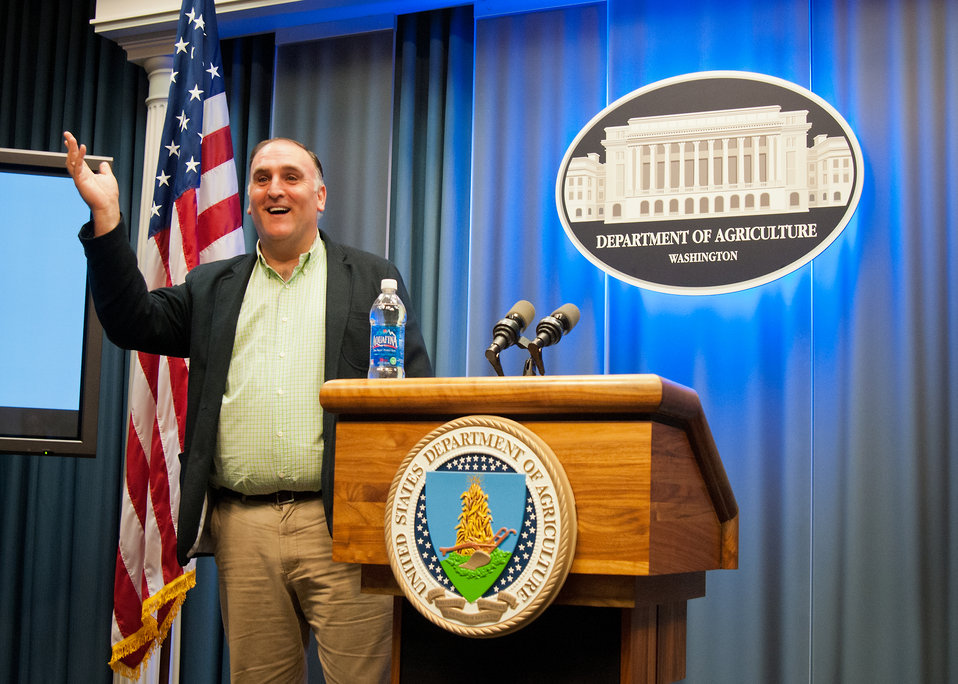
Chef Jose Andres, Chef/Owner, Think Food Group the guest speaker at the kick-off meeting of the United States Department of Agriculture White House Liaison Weekly Political Appointee Meeting for the New Year in Washington, DC, Thursday, January 20, 2012. Chef Andres discussed creativity and how it can contribute to food policy.